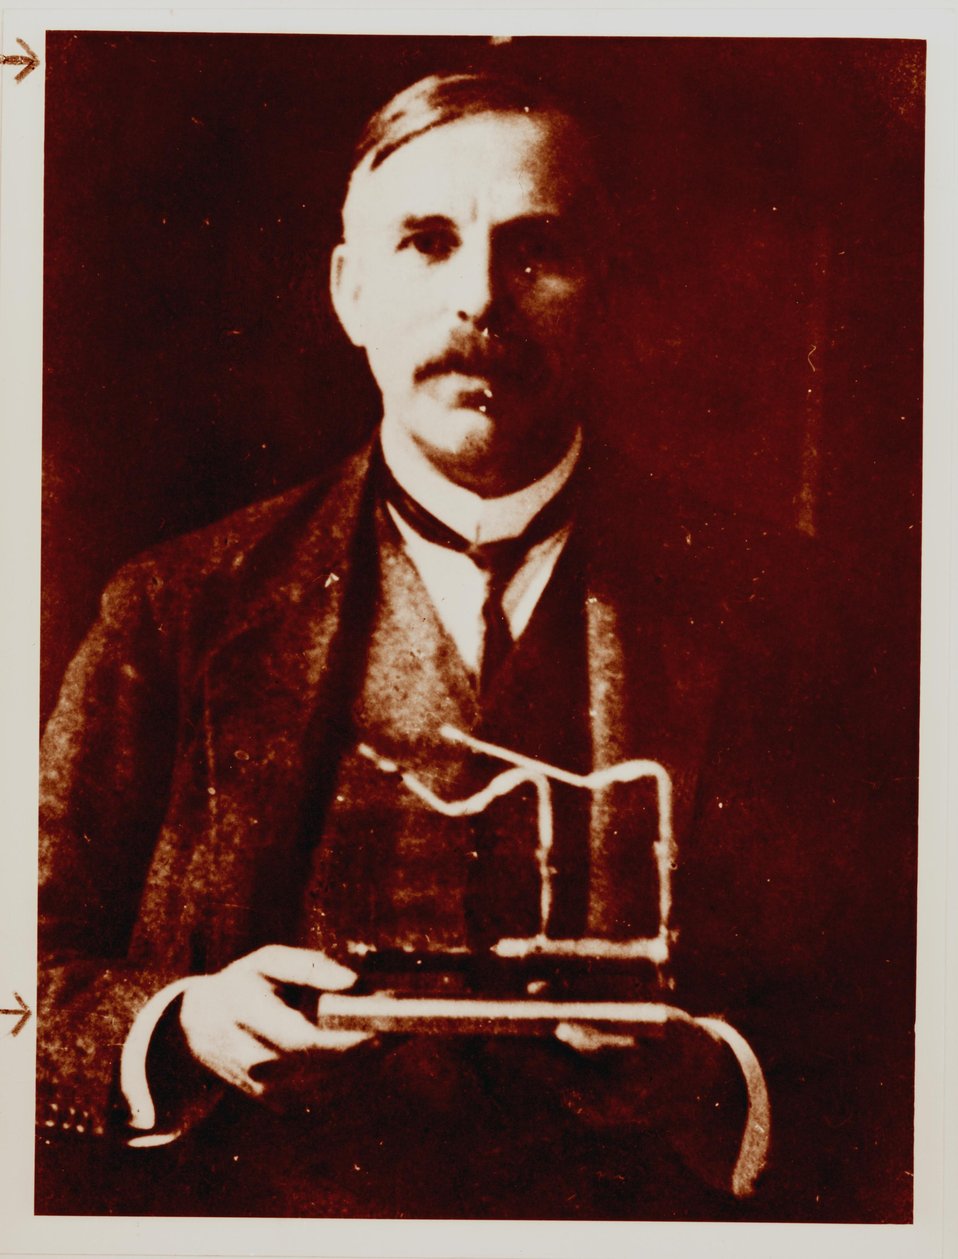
Earnest Rutherford